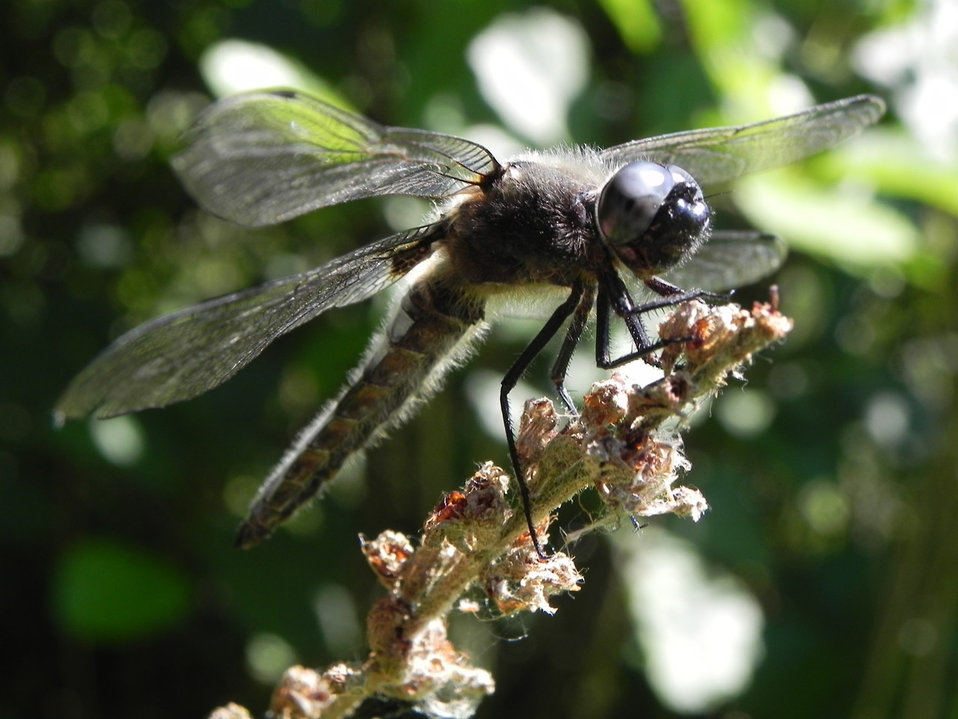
Dragonfly closeup taken at bures lake, suffolk, uk.